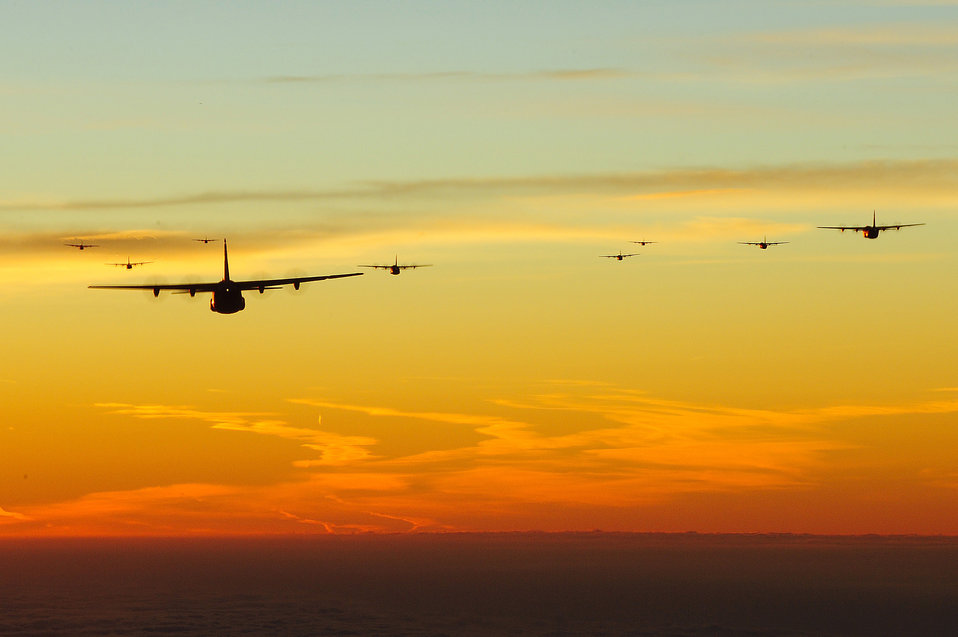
Off into the sunset

A C-130J Super Hercules flies in a 10-ship formation Oct. 5, 2011, over southern Germany, during Europe's first full-spectrum training environment rotation. The C-130J is assigned to the 37th Airlift Squadron at Ramstein Air Base, Germany.